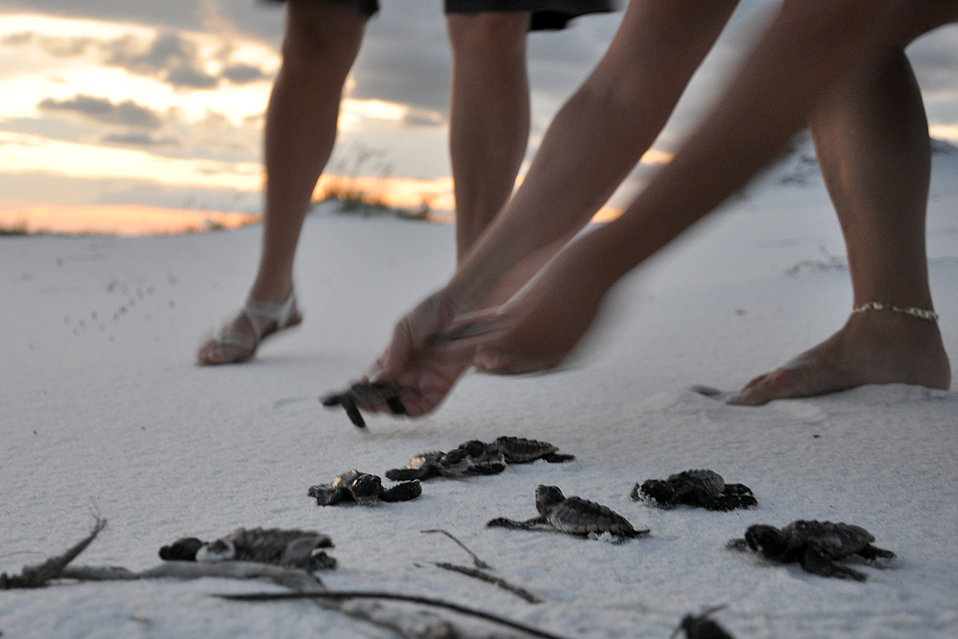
Loggerhead Sea Turtles at Eglin AFB

EGLIN AIR FORCE BASE, Fla. - Twenty-three Loggerhead baby sea turtles were released into the wild off Eglin's beaches on Santa Rosa Island, Aug. 14. The baby turtles were removed from their nests by endangered species biologists a few days prior to release to enhance their chances for survival after it was discovered they were unable to dig their way out. Most sea turtles lay three to five nests with 80-140 eggs per nest. Female sea turtles return to the beach where they were born to lay their eggs. Currently, Eglin's beaches are home to more than 20 active nests.